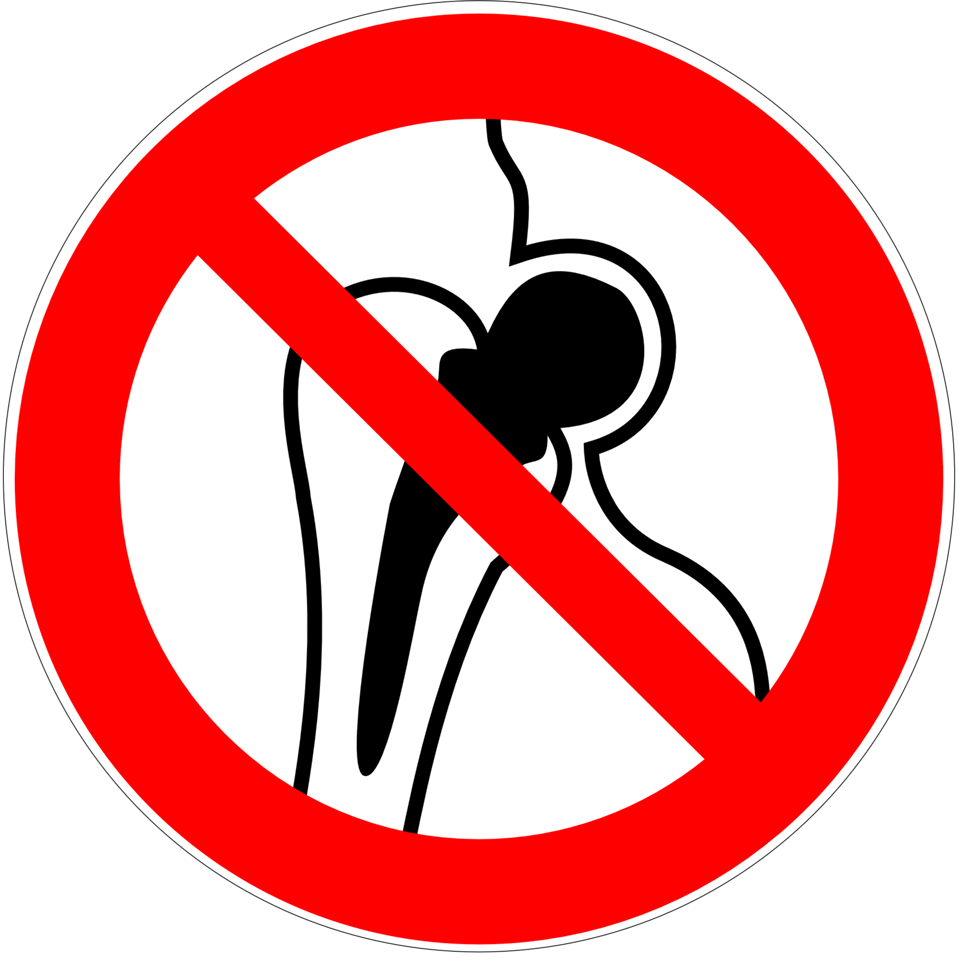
Deutsch: Verbot für Personen mit Implantaten aus Metall, Verbotszeichen D-P016 nach DIN 4844-2